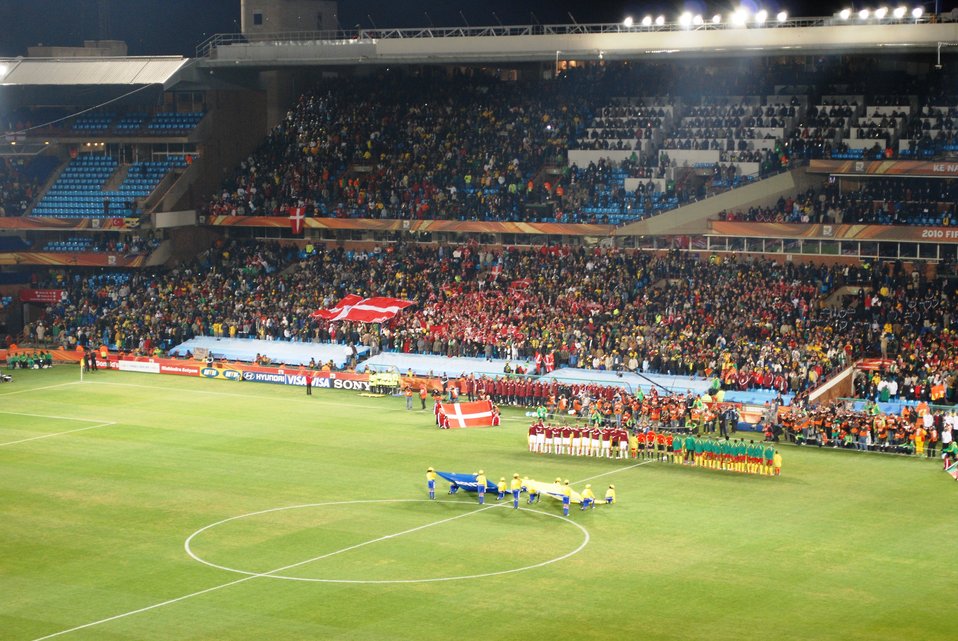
Danish and Cameroonian Players Stand for Their National Anthems

The Danish and Cameroonian soccer players stand for their national anthems before the kickoff of their World Cup match at Loftus Versfeld Stadium in Pretoria, South Africa, on June 19, 2010.